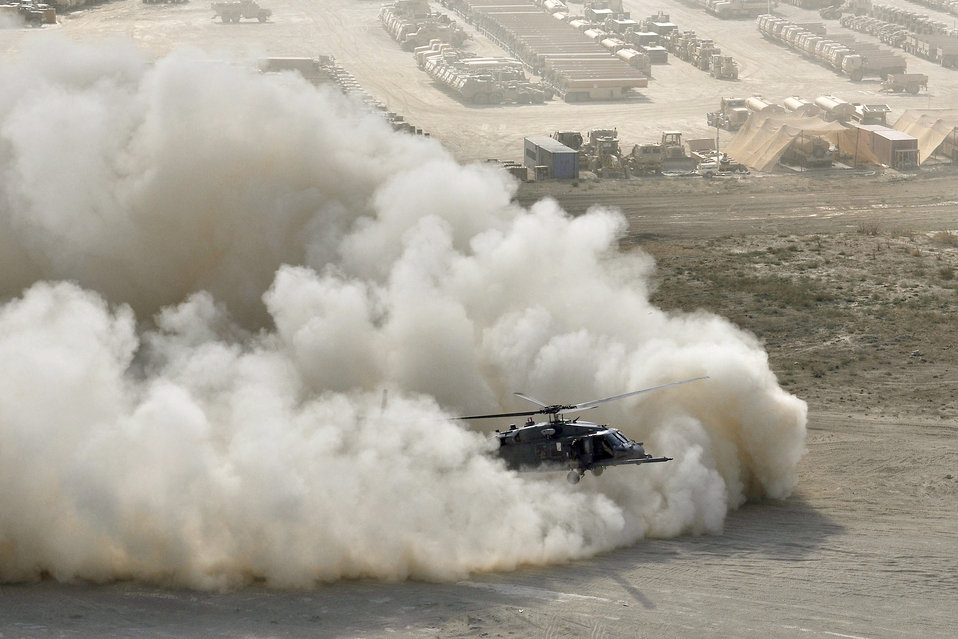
Pararescueman train to help save lives

Airmen flying a HH-60G Pave Hawk during a pararescue training mission perform a brown-out landing during a training mission at Bagram Airfield, Afghanistan, Sept. 24, 2010. The pararescuemen are assigned to the 33rd Expeditionary Rescue Squadron.